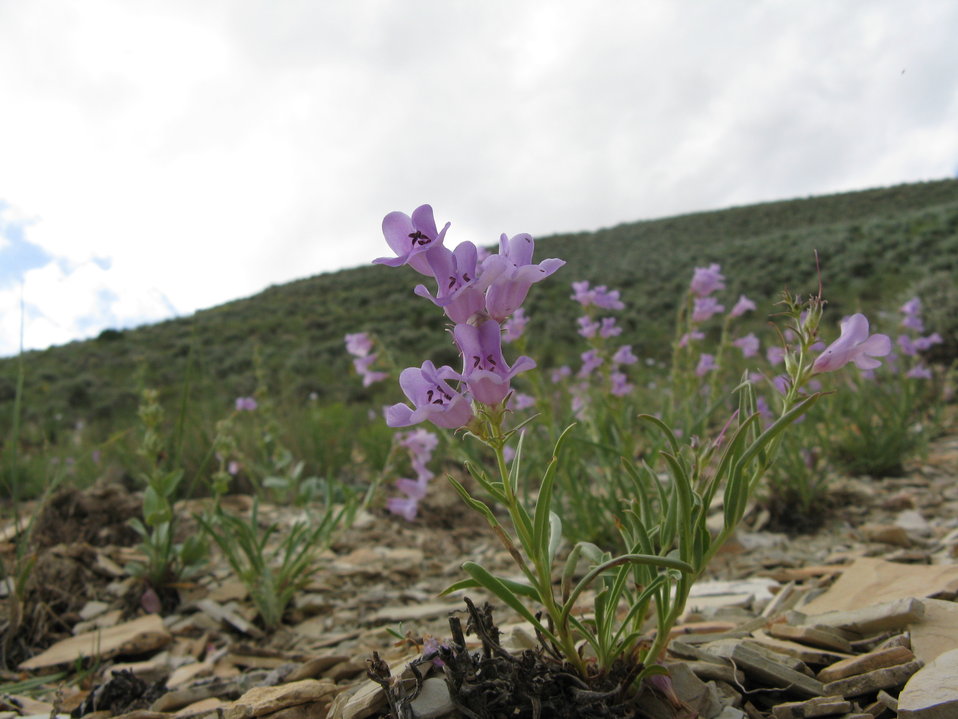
White River beardtongue (Penstemon scariosus var. albifluvis) is found only in the Uintah basin in Utah and Colorado. The species faces similar threats as Graham’s beardtongue (Penstemon grahamii) but may be more vulnerable due to its even smaller population sizes.